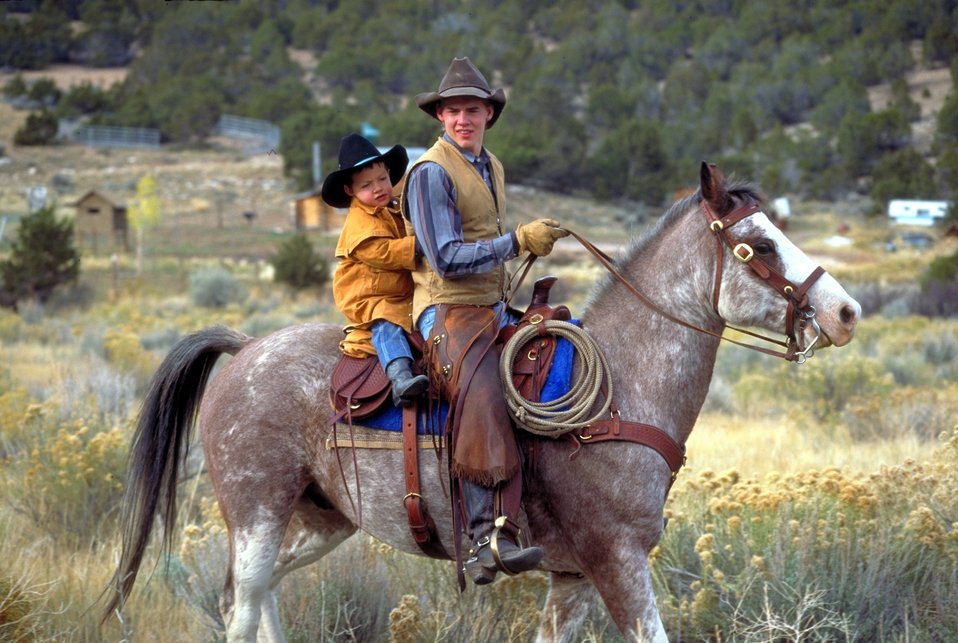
Working cowboys living near Vernal, Utah.